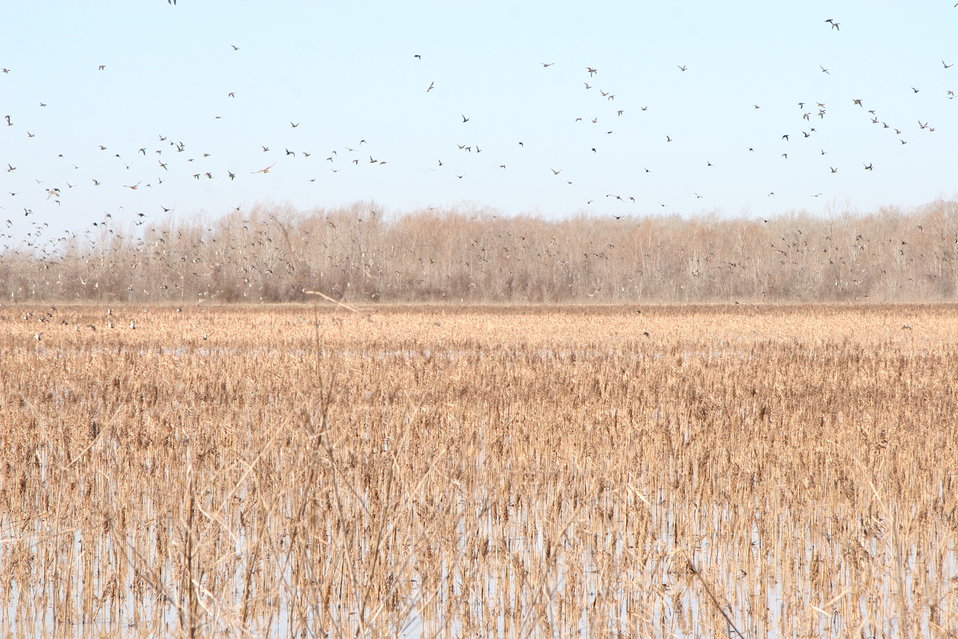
Ducks at Grand Cote

Ducks and geese fly above wetlands at Grand Cote National Wildlife Refuge in Louisiana. The refuge is an important rest stop for many of the migrating birds that make their way from Alaska to the Gulf of Mexico and back along the Mississippi Flyway. The Conservation Fund is helping the U.S. Fish and Wildlife Service restore the historical bottomland hardwood forests that help feed and shelter the shorebirds, blackbirds, warblers and others.

To learn more about the carbon mitigation techniques being used at Grand Cote and Lake Ophelia, read our blog post, 'Louisiana: Re-planting Forests, Reducing CO2 and Saving Wildlife'